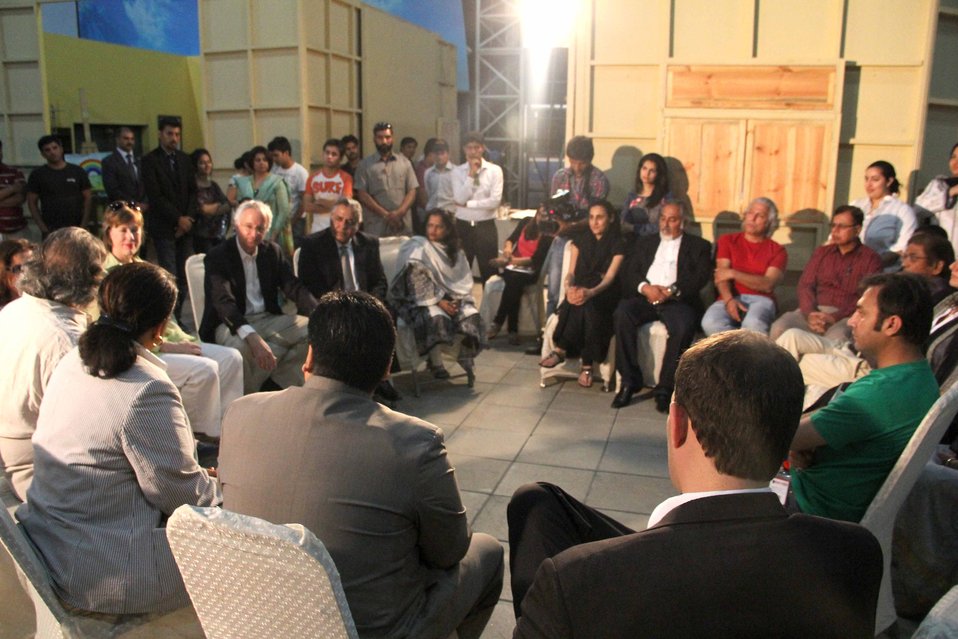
U.S. Ambassador’s Visit to Sim Sim Hamara Highlights U.S. Commitment to Improved Children’s Education in Pakistan at Lahore on 28 April, 2012

US Officials and Sim Sim Production team